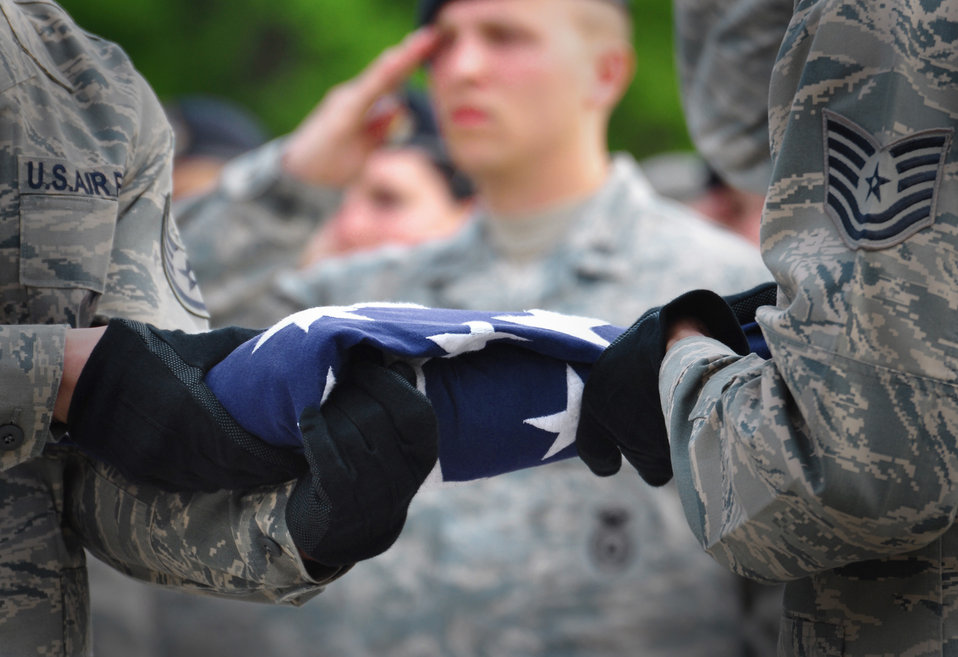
Remembering the fallen

Honor guard members fold a flag during a ceremonial retreat honoring fallen comrades May 19, 2011, at Osan Air Base, South Korea, in observance of National Police Week.